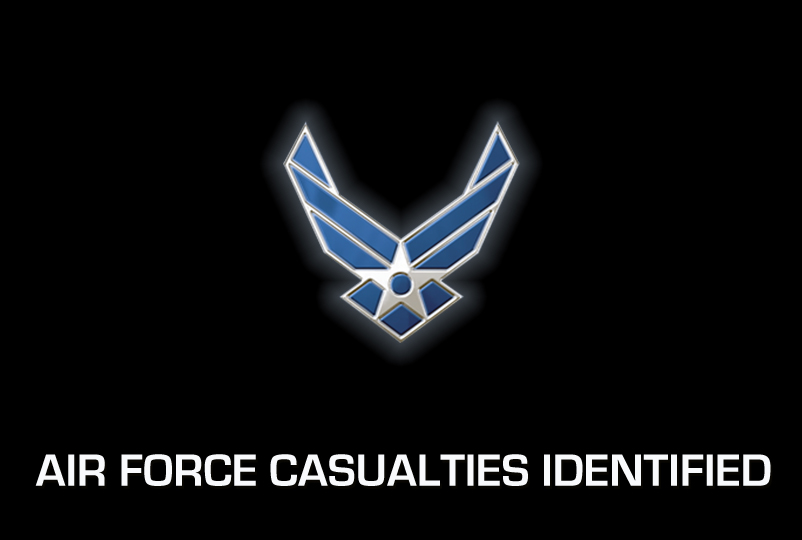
Air Force Casualties Identified